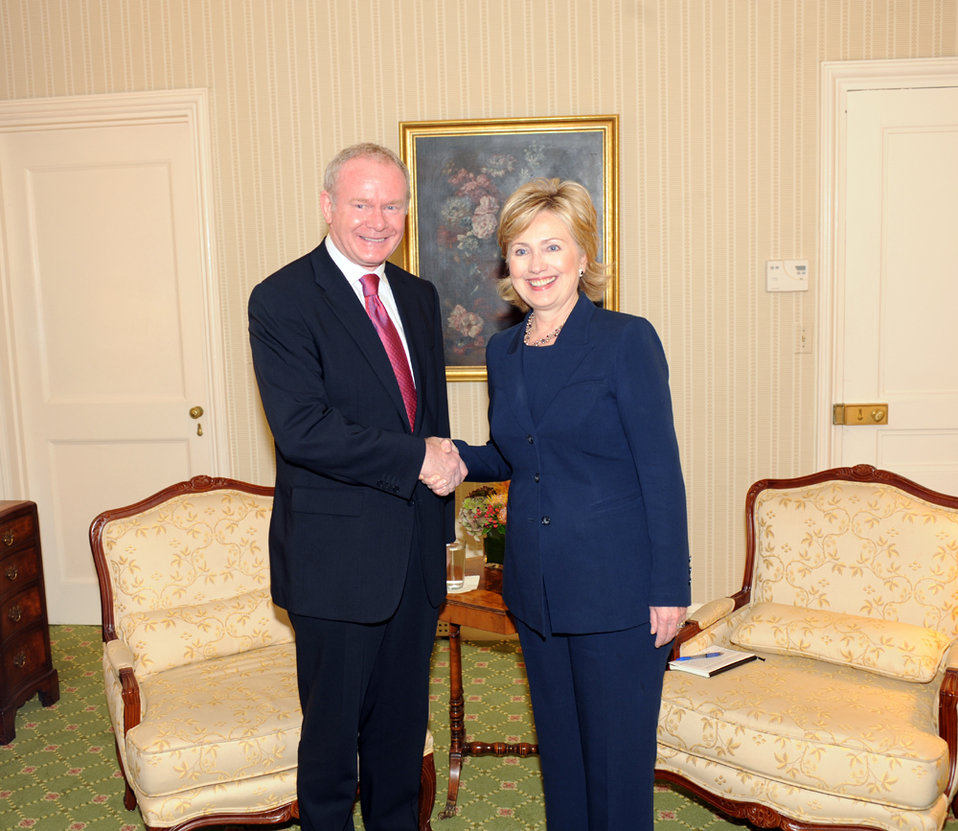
UNGA 2009: U.S.-Northern Ireland Joint Meeting

U.S. Secretary of State Hillary Rodham Clinton greets a Northern Ireland Deputy First Minister Martin McGuinness during a U.S.-Northern Ireland joint meeting at the Waldorf Astoria hotel during the 64th Session of the UN General Assembly in New York City, New York September 24, 2009.